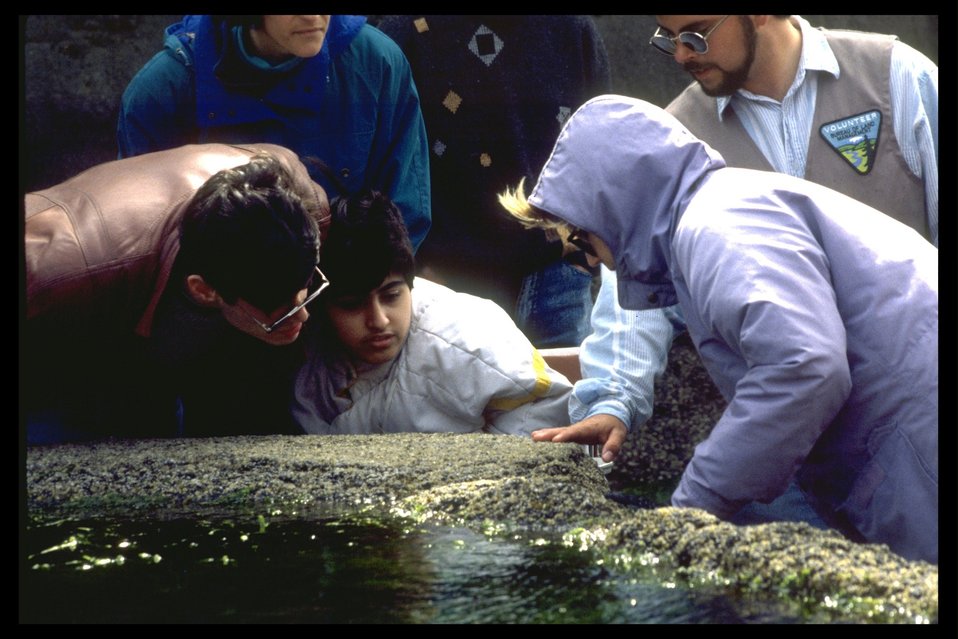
Tidepooling in Quarry Cove with BLM employee, Ed White.